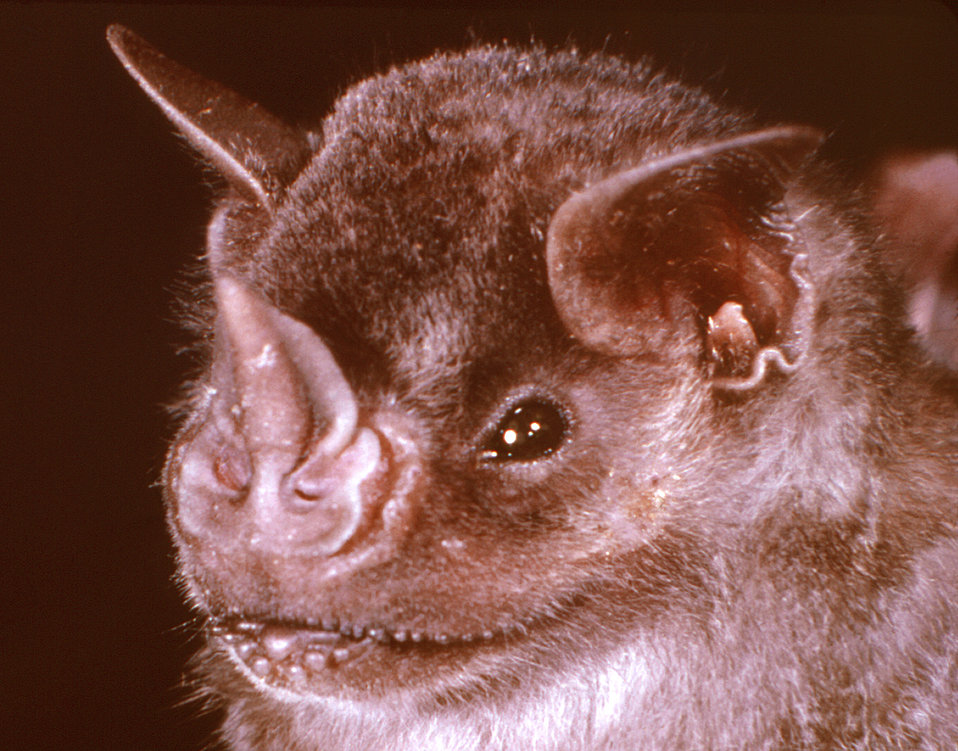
This image depicts the head of an Underwood's mastiff bat, Eumops underwoodi. An insectivore, this flying mammal is a member of the family, Molossidae.